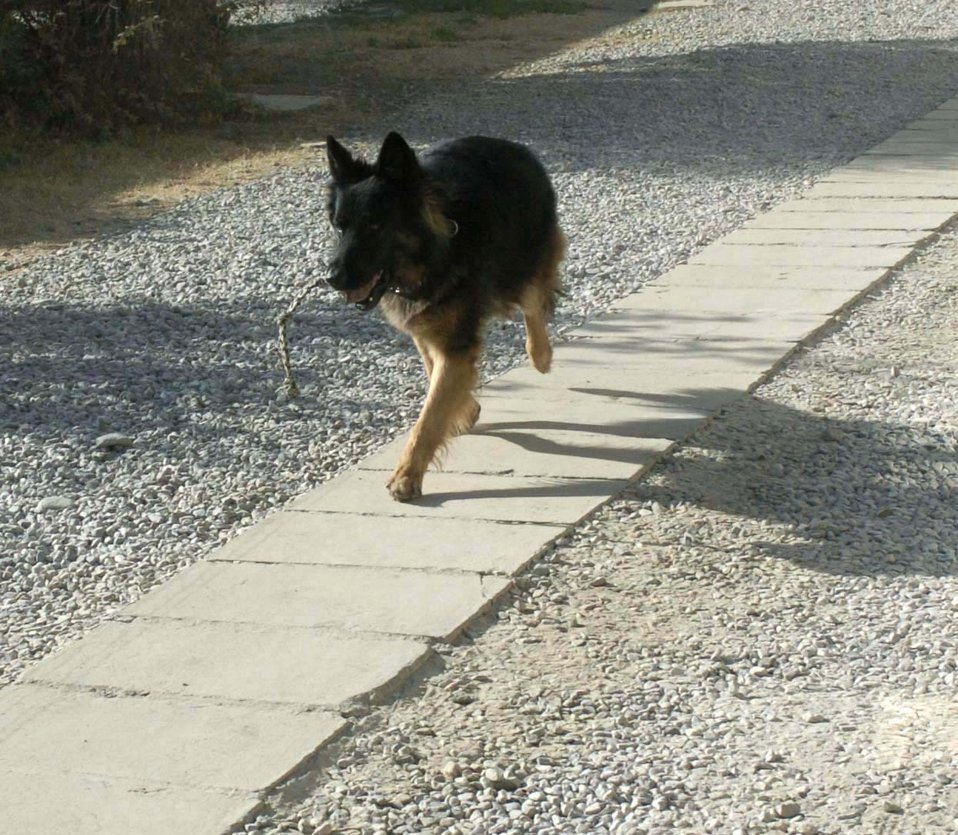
Airman, dog provide security for Afghanistan

KABUL COMPOUND, Afghanistan -- Dax, a military working dog, takes a break from his duties here. Dax and his handler, Staff Sgt. David Yepsen, are the only Air Force canine team in Afghanistan. They are deployed supporting Operation Enduring Freedom from the 43rd Security Forces Squadron at Pope Air Force Base, N.C.